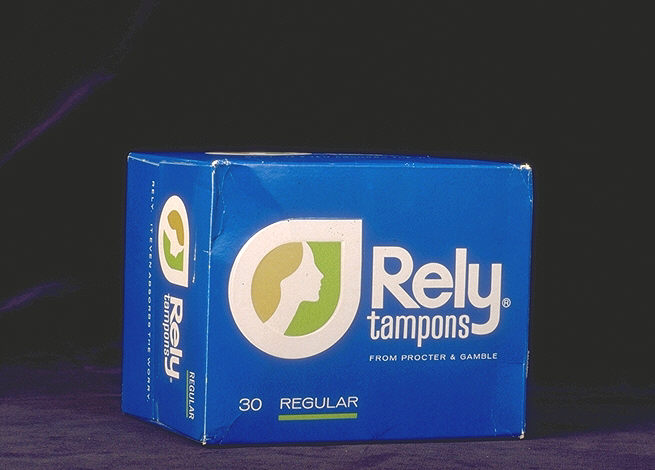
Box of Rely tampons.